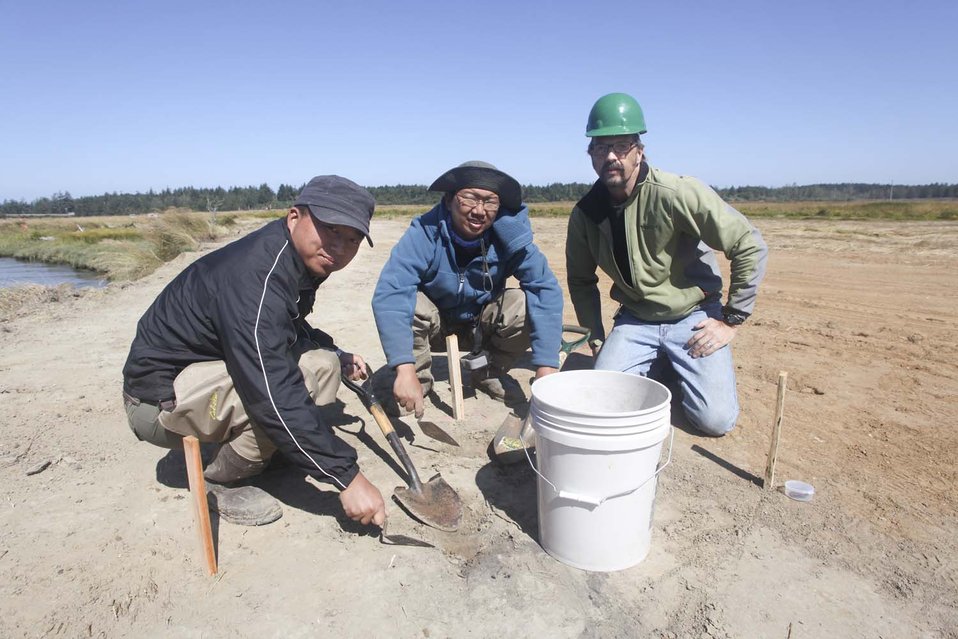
Digging an archaeological test pit